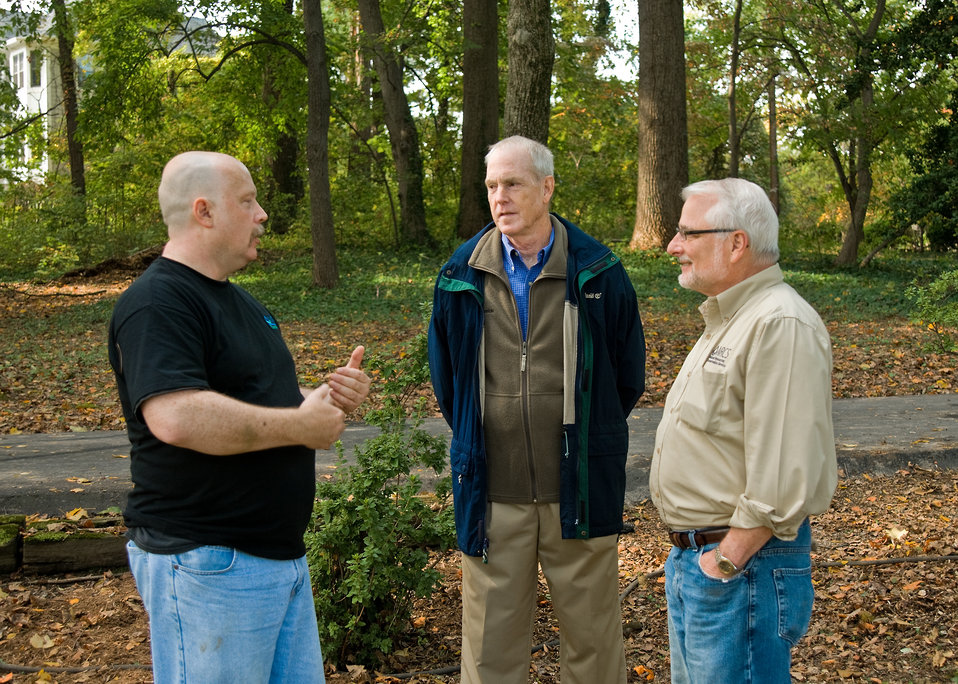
Brian Symmes (left), “Eight Oaks”, Whit Field (center), Vice President and General Counsel, Northern Virginia Conservation Trust and Dave White (right), Chief, Natural Resources Conservation Service discuss the history and knowledge that Dr. Hugh Hammond Bennett brought to soil conservation. Natural Resources Conservation Service employees performed landscaping and maintenance work at, “Eight Oaks” Dr. Bennett’s home in McLean, Virginia on Friday, October 15, 2010 the work is part of the 2010 celebration of the 75th Anniversary of the Natural Resources Conservation Service. USDA Photo 10di1524-35 by Bob Nichols.